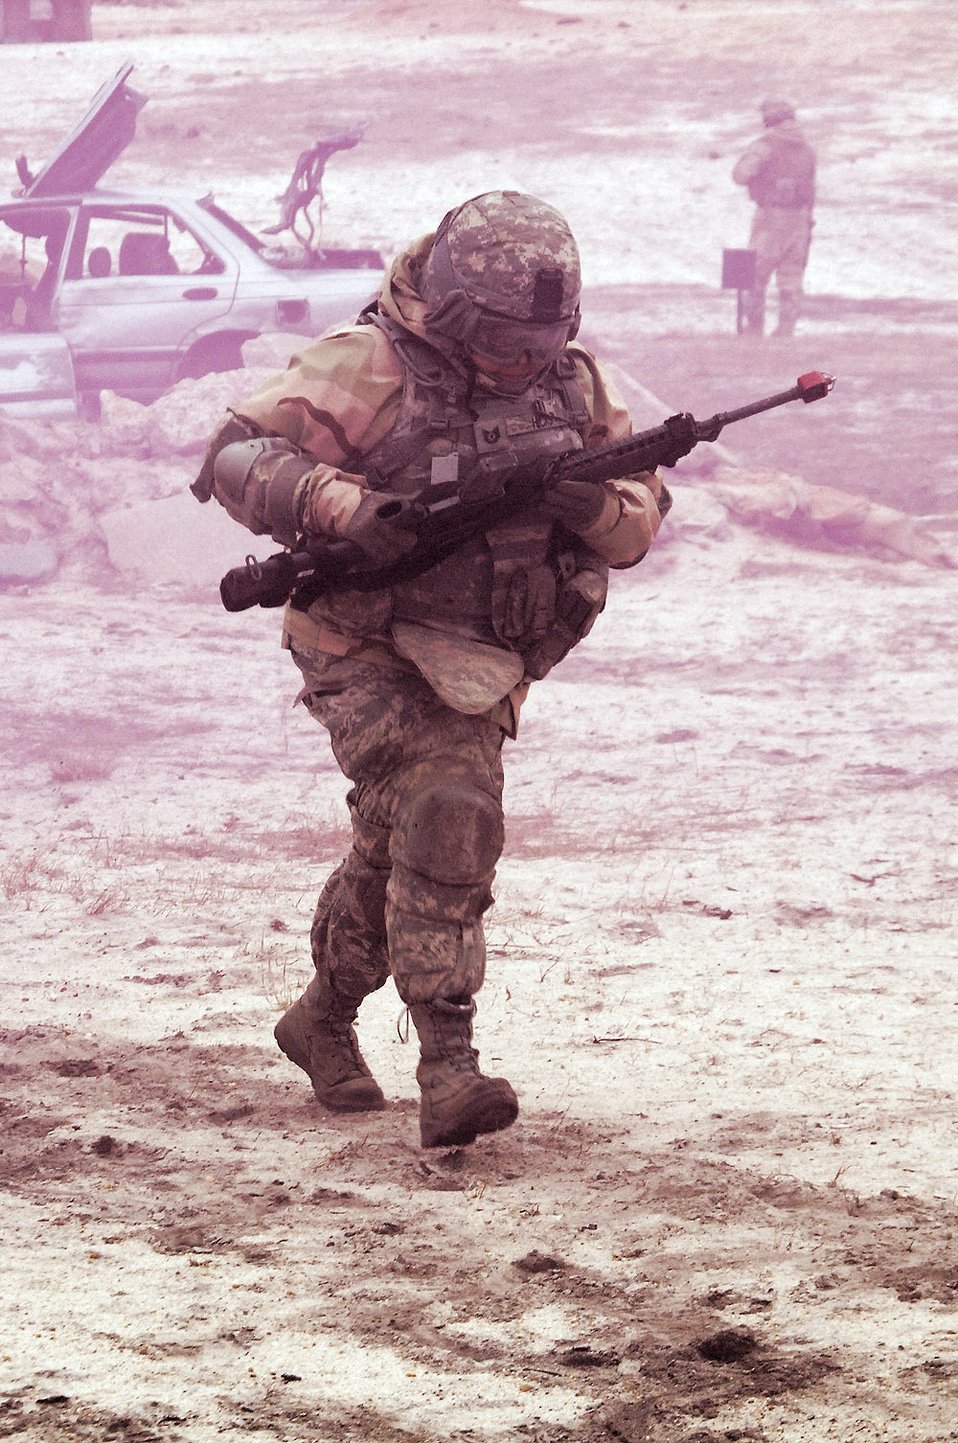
Airmen master Soldier skills training

Tech. Sgt Mercedes Hicks runs through a smoke screen on the way to her next point during Individual Movement Technique training at the Fort Dix, N.J., improvised explosive device range. The training teaches troops how to conduct maneuvers in an unknown, often hostile, environment. Sergeant Hicks and her fellow Airmen, members of USAF Class 25, are completing the Soldier Skills Training Course as they prepare for various deployments around the globe. There are about 75 Airmen currently going through the month-long course.